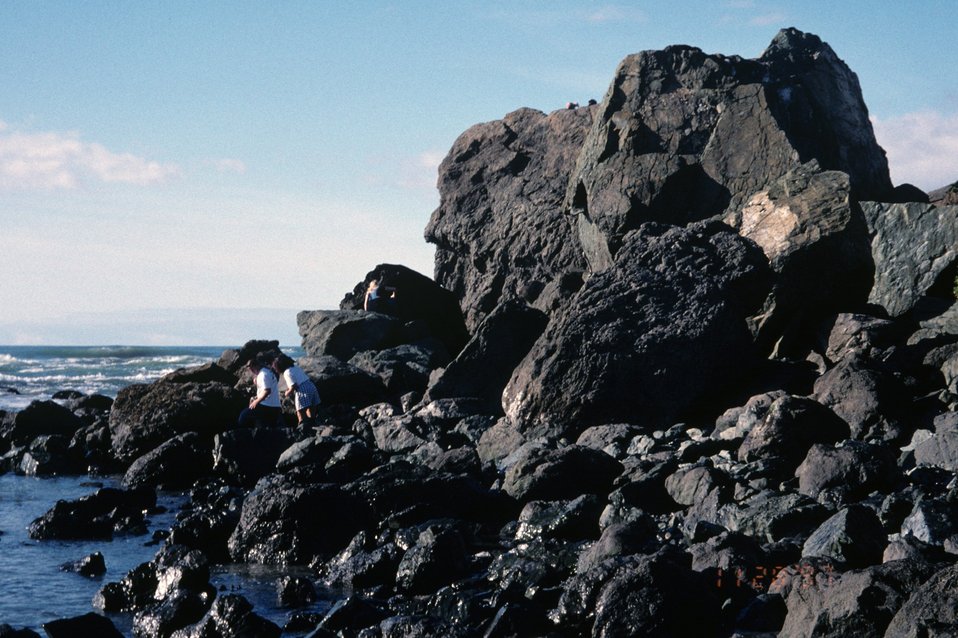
Dillon Beach